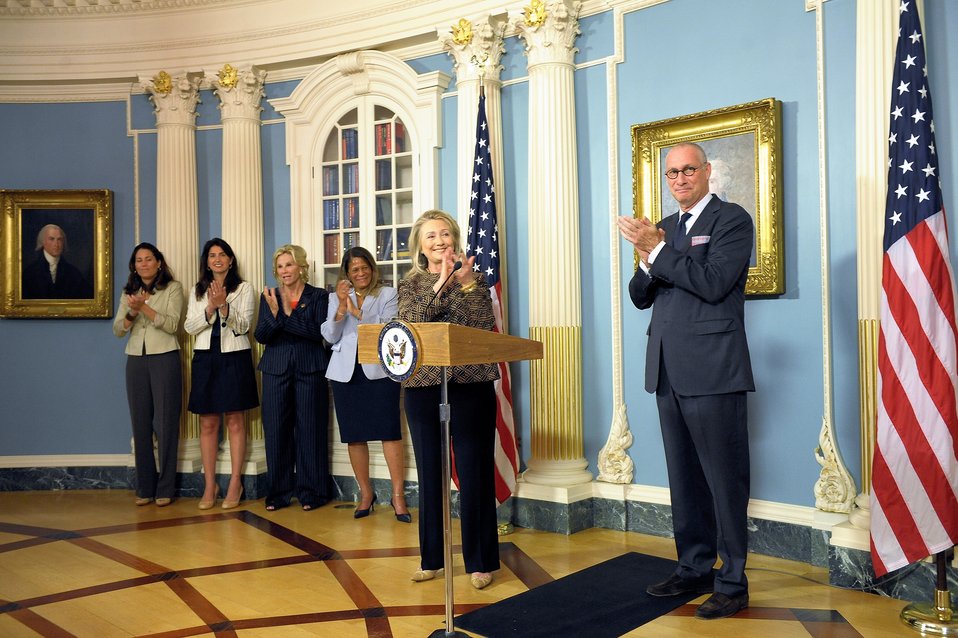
Secretary Clinton With ESPN President Skipper

U.S. Secretary of State Hillary Rodham Clinton and and ESPN President John Skipper make an announcement regarding international efforts to empower women and girls through sports at the U.S. Department of State in Washington, D.C., on June 21, 2012.